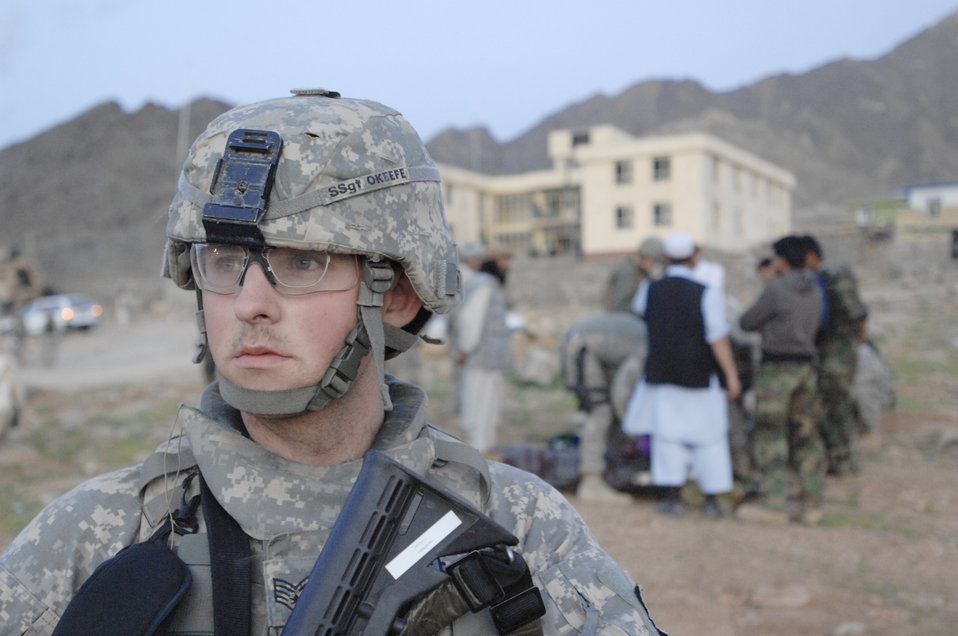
Reconstruction project shifts to lifesaving mission

Staff Sgt. Jonathan Okeefe spent a year deployed to Afghanistan where he served as chief communications officer for the Kapisa/Parwan provincial reconstruction team based at Bagram Airfield, Afghanistan. He is a 338th Training Squadron Det. 1 satellite, wideband and telemetry systems instructor at Fort Gordon, Ga.